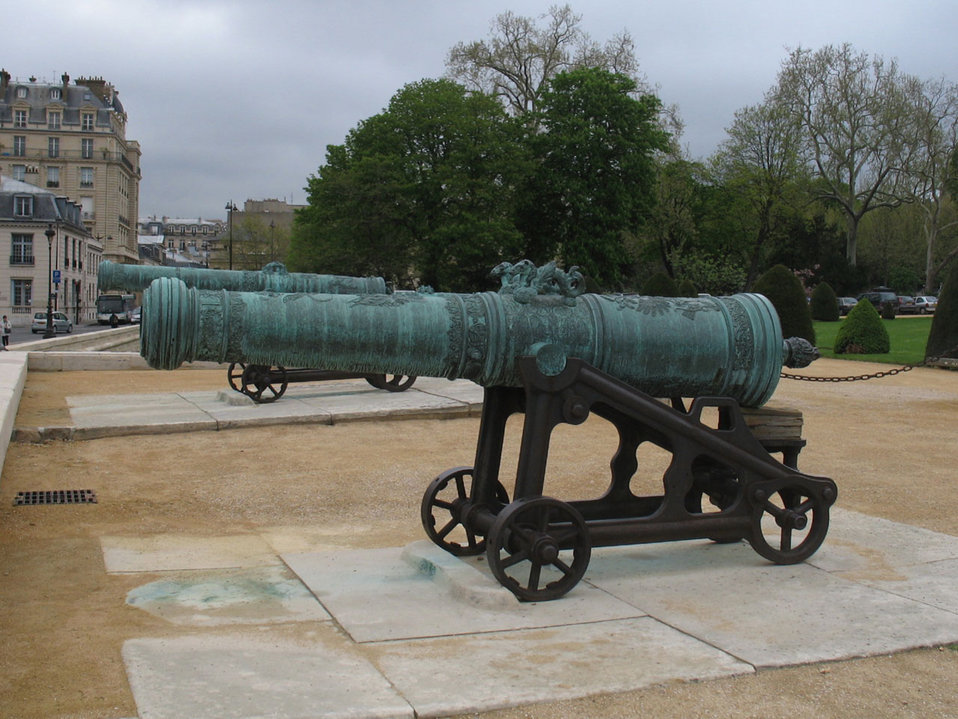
Captured Chinese cannons on display in the front court of Les Invalides in Paris